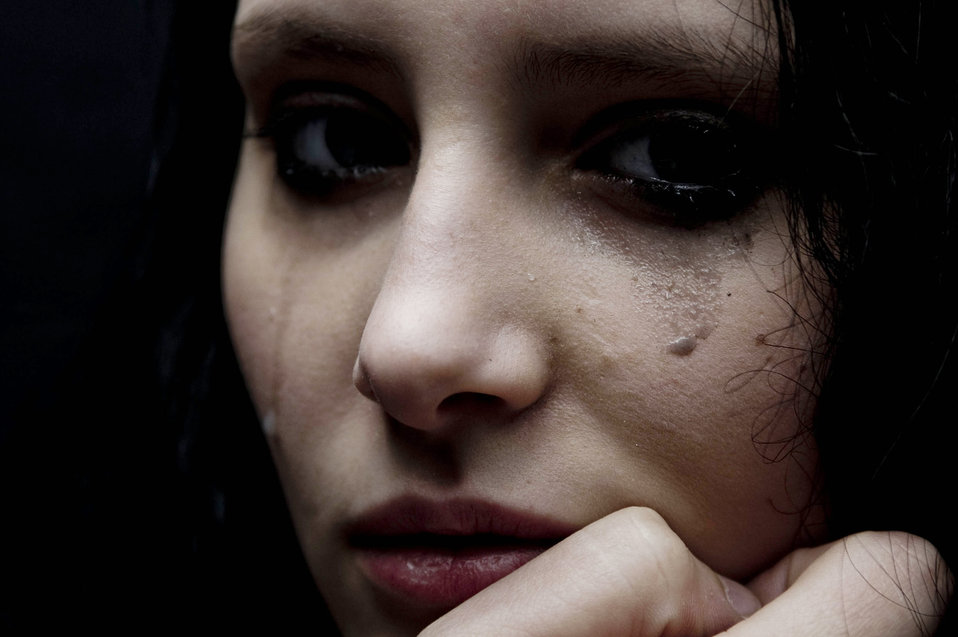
Portrait of a sexual assault